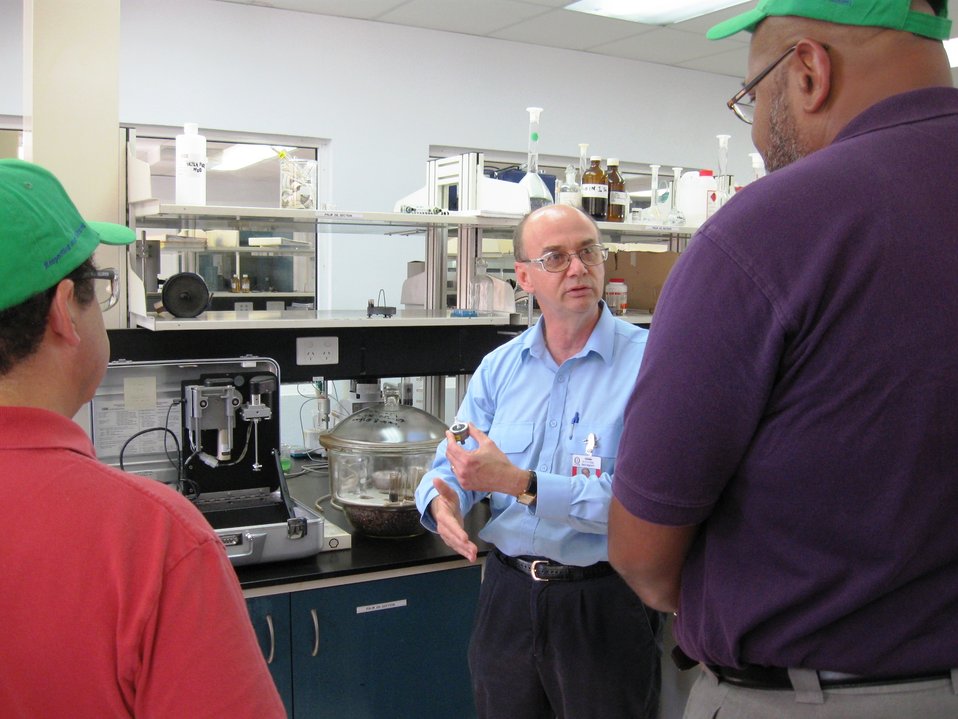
Coordinator for International Energy Affairs Goldwyn and Ambassador Taylor Tour the Interoil Refinery

U.S. Secretary of State Hillary Rodham Clinton’s Coordinator for International Energy Affairs David Goldwyn and U.S. Ambassador to Papua New Guinea, Solomon Islands and Vanuatu Teddy Taylor tour the laboratory at the Interoil refinery just outside Port Moresby, Papua New Guinea, on June 18, 2010.